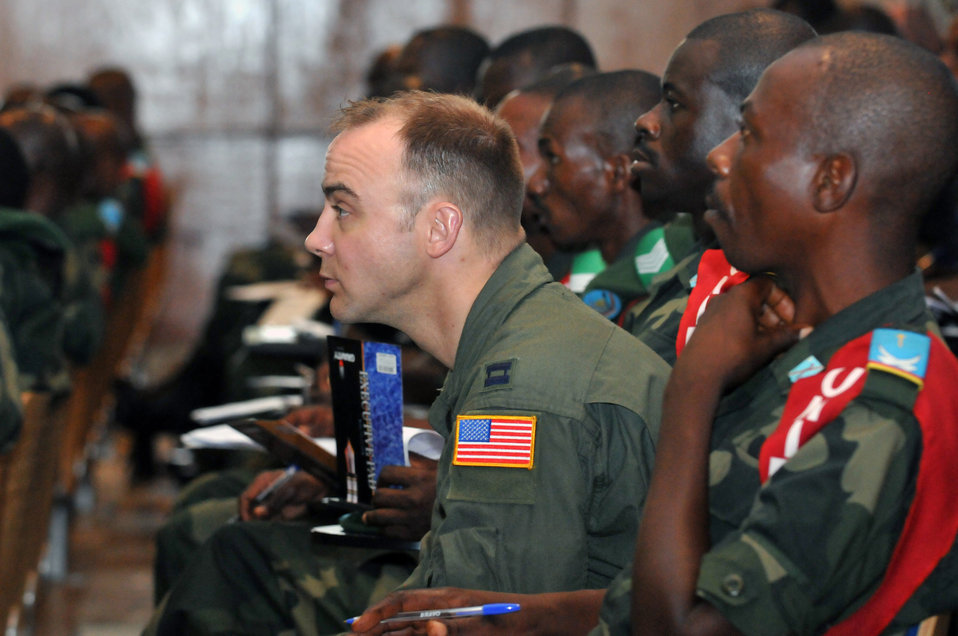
Exchanging aeromedical evacuation training across the continents

Capt. Chris Wolf listens to an academic lesson during MEDLITE 11, April 26, 2011, at Kinshasa, Democratic Republic of the Congo. MEDLITE 11 is a joint medical exercise focused on aeromedical evacuation, to improve the readiness of U.S. Air Force and DRC personnel. Captain Wolf is a flight nurse with the Minnesota Air National Guard's 133rd Airlift Wing.